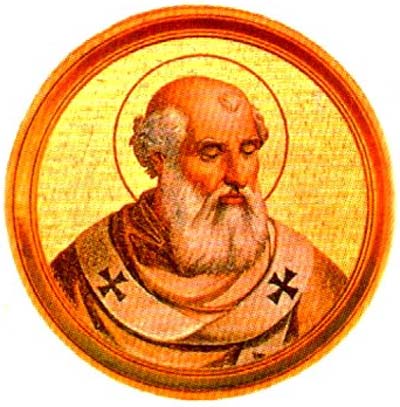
Italiano: Papa Zaccaria